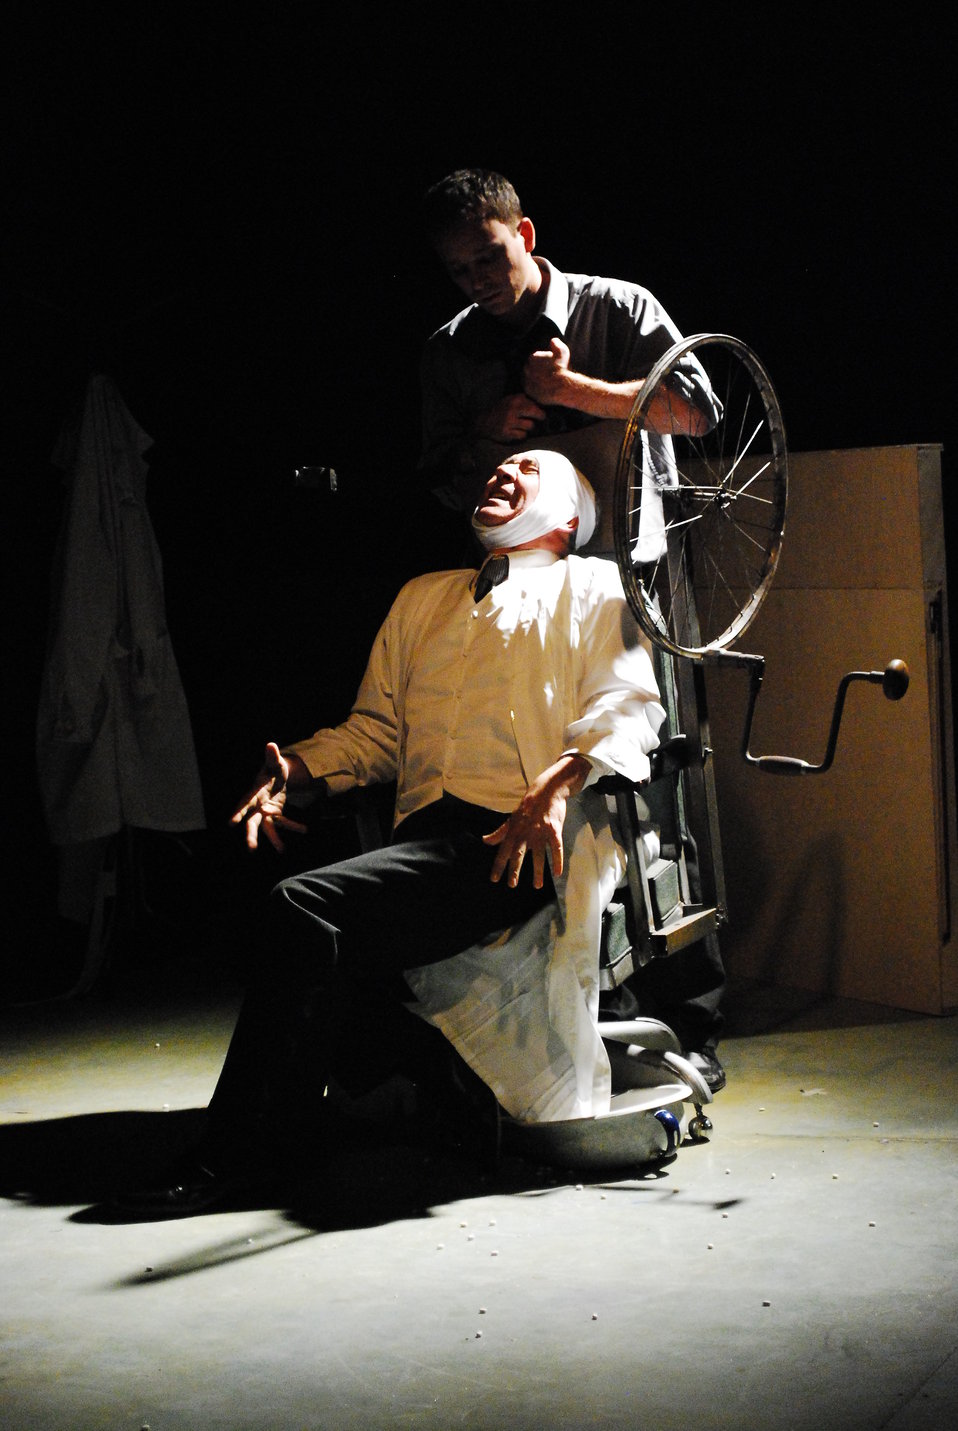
Español: Ensayo general de 'Cabo Verde' (2009), obra teatral escrita y dirigida por Gonzalo Demaría. En la foto, Rodolfo Roca y Luciano Correa, componiendo unos siniestros médicos higienistas.